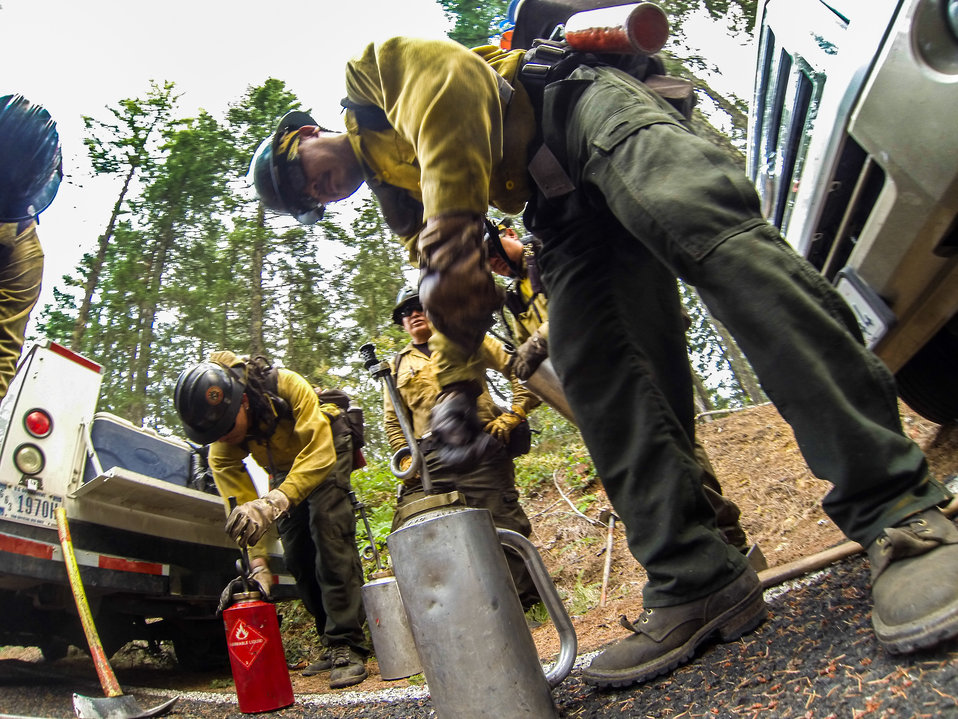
Geronimo Interagency Hotshot Crew, Department of the Interior (DOI) Indian Affairs (IA) Bureau of Indian Affairs (BIA) San Carlos Agency in Arizona; on assignment at the Big Windy Complex Wildlands Fire, approximately 15 miles west of Interstate-5 and East Northeast of Galice, Oregon, conducts a prescribed burn 'burnout' operation to help stop the main fire that may head toward this roadway, on Friday, Aug 9, 2013. The primary mission of the Interagency Hotshot Crews (IHC) is to provide a safe, organized, mobile and highly skilled hand crew for all phases of wildland fire suppression. The arduous duties and specialized assignments required of IHC personnel require uniform staffing, certification, training, equipment, communications, transportation, organization, and qualifications that adhere to interagency standards and guidelines.